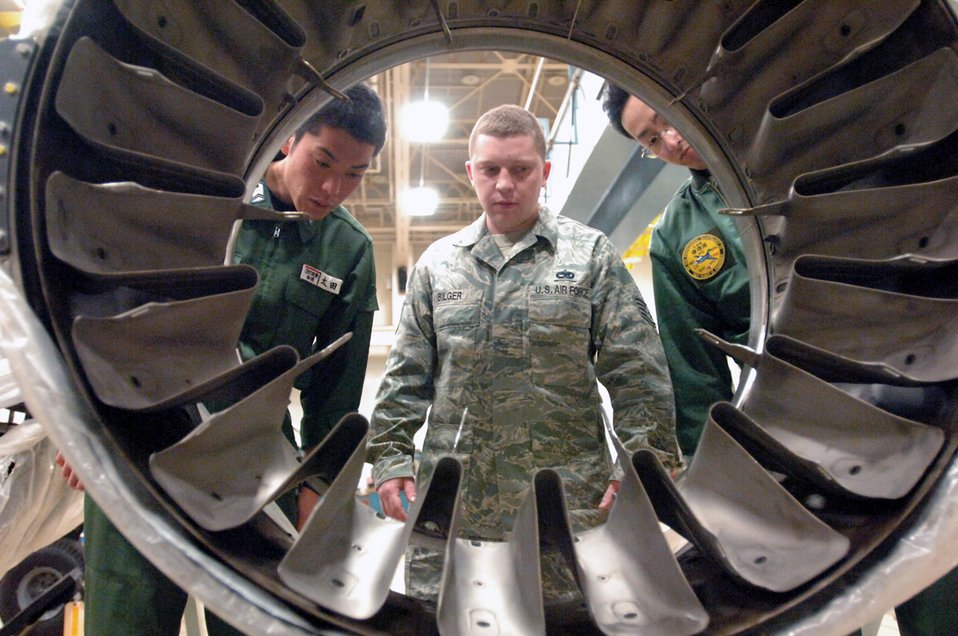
U.S., Japan forces join together for bilateral exchange

Staff Sgt. Joseph Bilger briefs Japanese Air Self Defense Force Tech. Sgt. Takuma Ota (left) and Staff Sgt. Masanobu Suzuki (right) on the capabilities of an augmentor mixing duct May 15 at Misawa Air Base, Japan. Sergeant Bilger is a 35th propulsion shop jet engine mechanic.